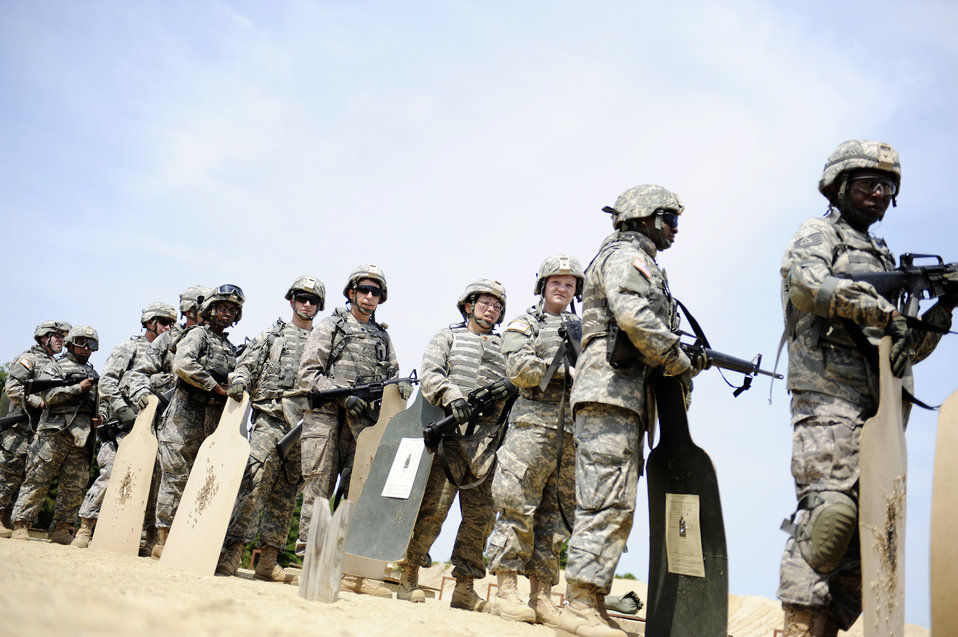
Airmen prepare for deployment

Soldiers and Airmen wait to clear their rifles after coming off the firing line during M-16/M-4 familiarization training Aug. 8 at Fort Dix, N.J.